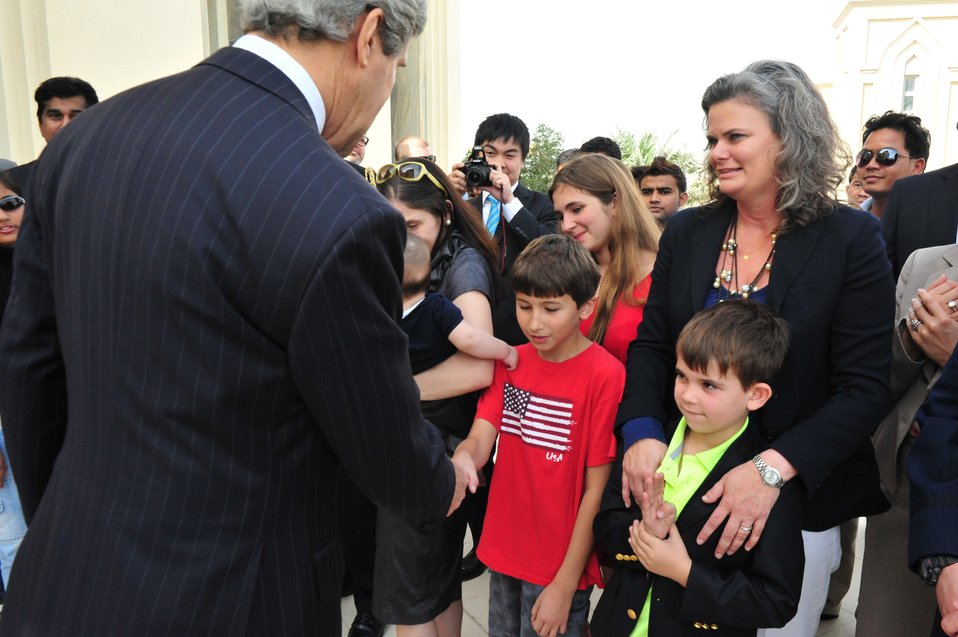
Secretary Kerry Shakes Hands With Embassy Doha Staff and Families

U.S. Secretary of State John Kerry shakes hands with the staff and families of the U.S. Embassy in Doha, Qatar, on March 6, 2013.